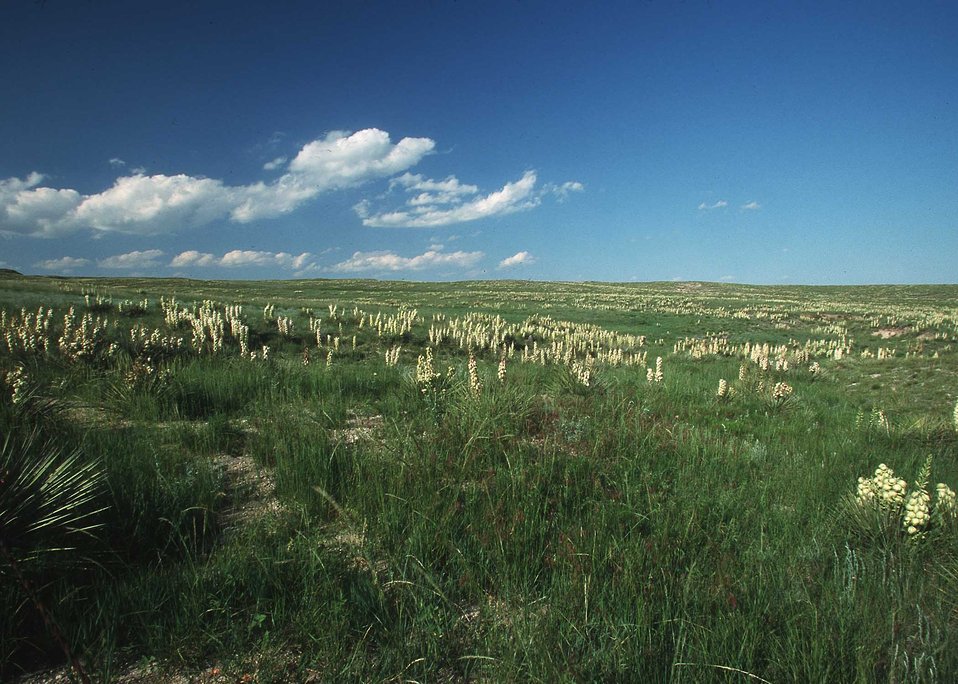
Spanish Bayonette on Pawnee Grassland, CO.